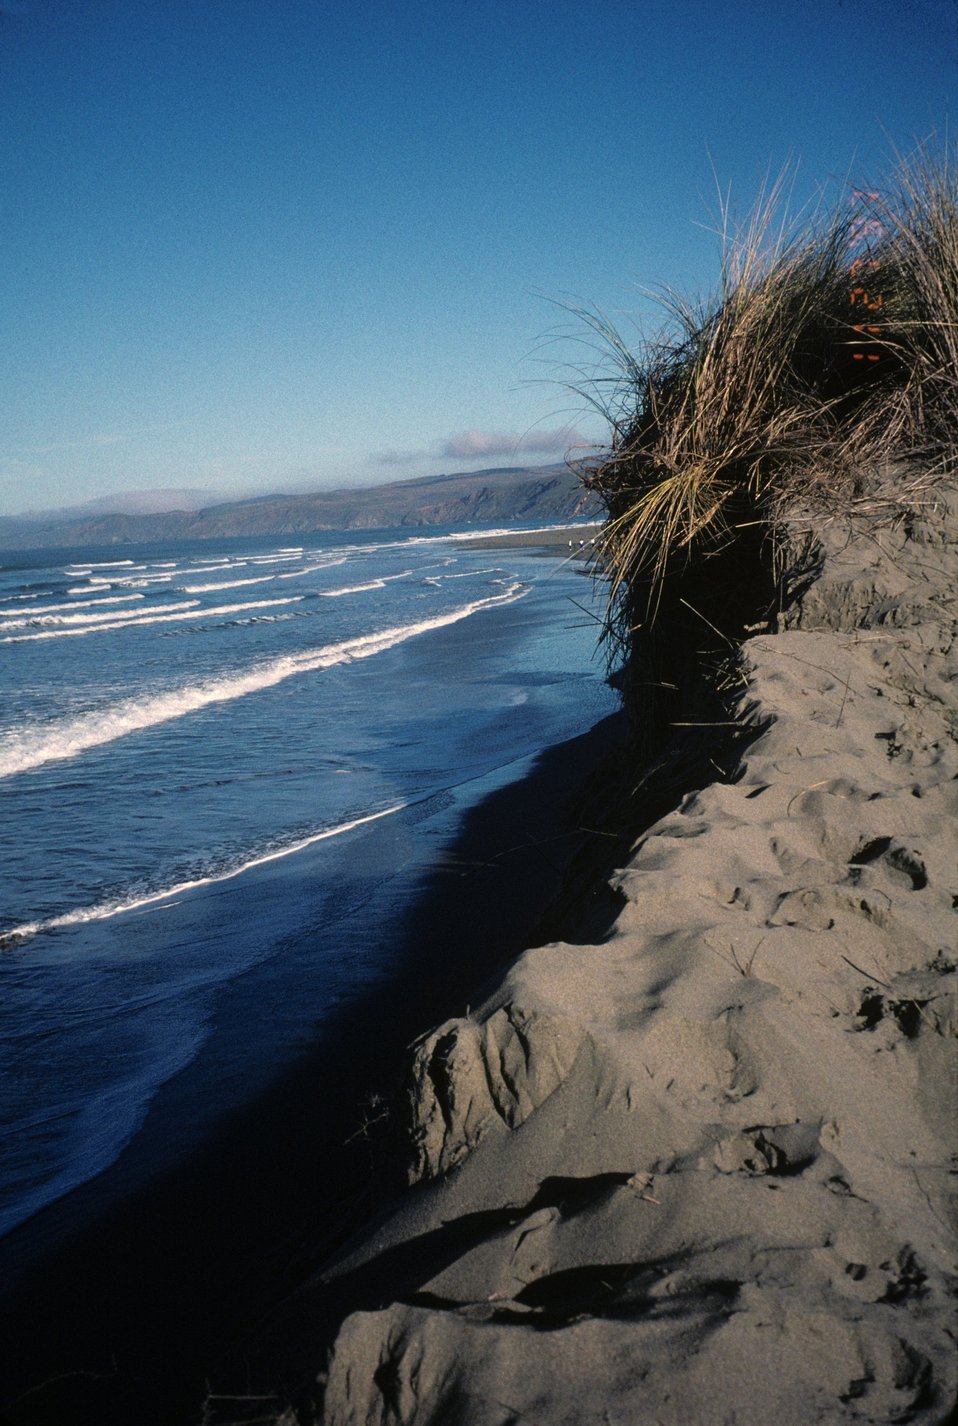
Dillon Beach